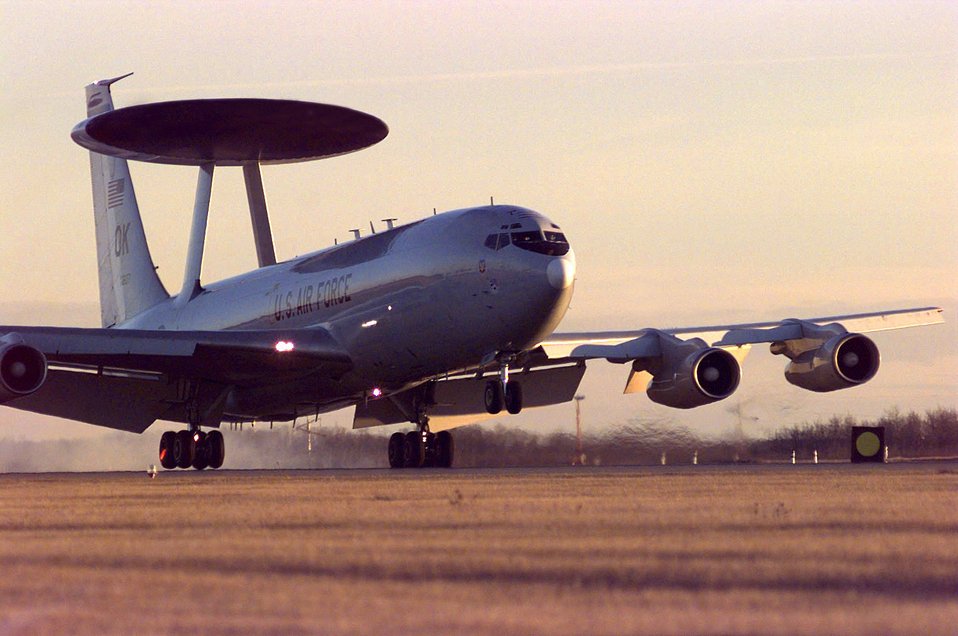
E-3

Returning from a mission during the air defense exercise Amalgam Warrior, an E-3 Sentry airborne warning and control system (AWACS) lands at Cold Lake, Canada.